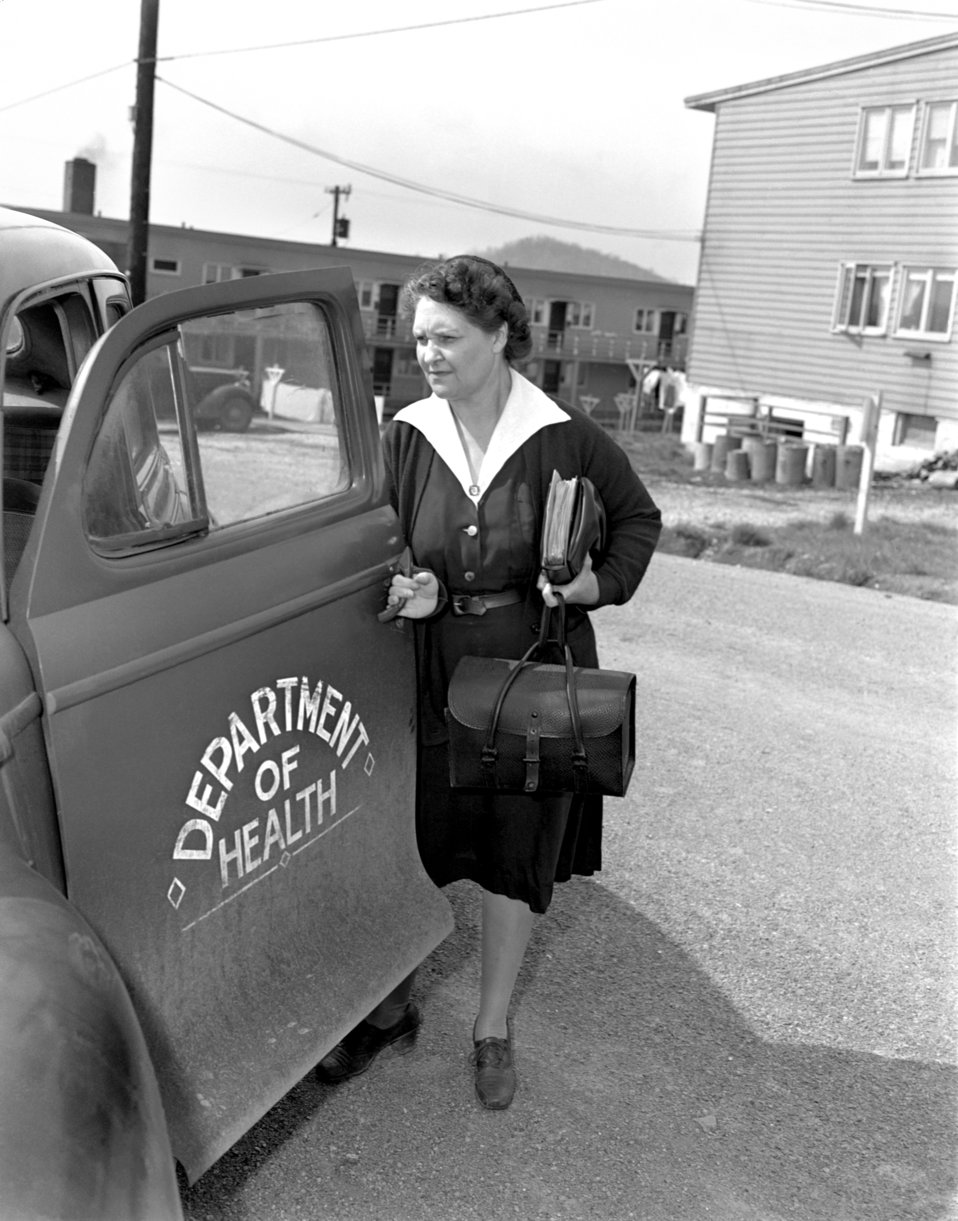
Public Health Nursing Oak Ridge 1947

3392-g DOE photo Ed Westcott 4-15-1947 Publicity for National Nurse Week Oak Ridge Tennessee